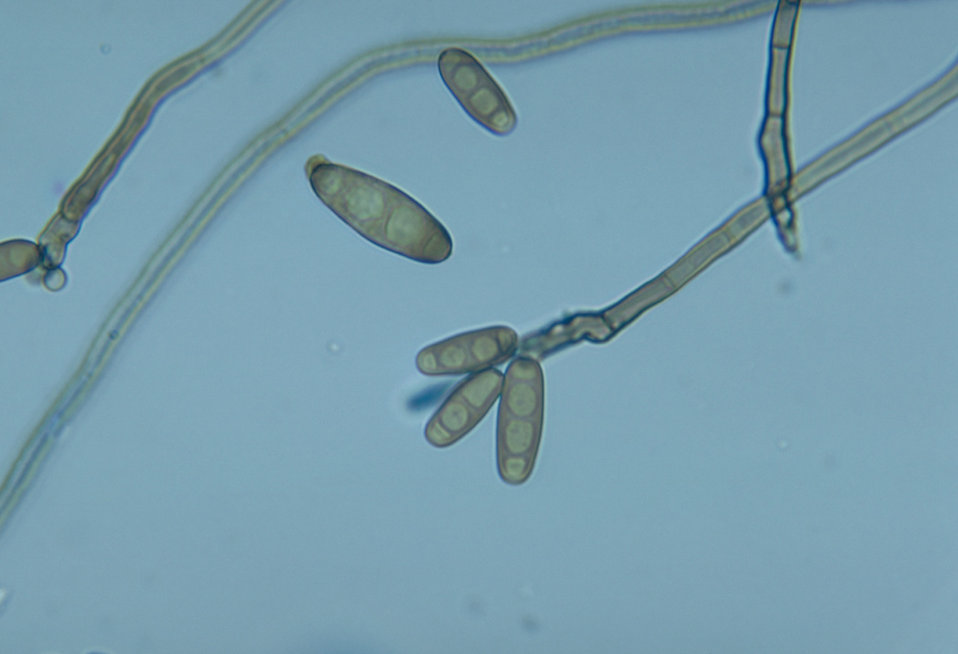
This photomicrograph shows conidiophores and conidia of the fungus Curvularia harveyi.